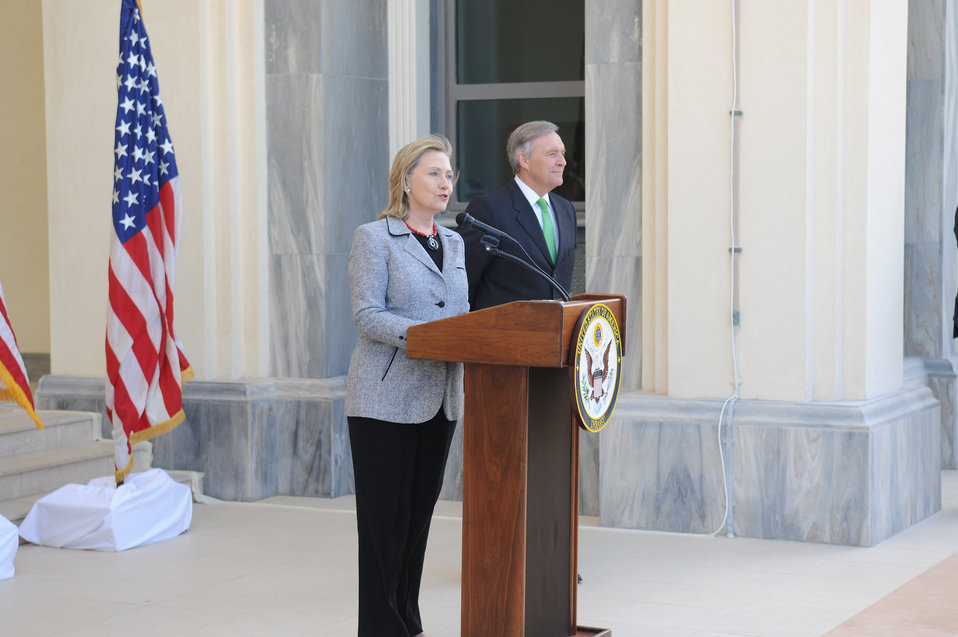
Secretary Clinton, With Ambassador LeBaron, Speaks With U.S. Embassy Doha Staff and Family

U.S. Secretary of State Hillary Rodham Clinton, with U.S. Ambassador to Qatar Joseph Evan LeBaron, speaks with U.S. Embassy Doha staff and family in Doha, Qatar, on January 13, 2010.